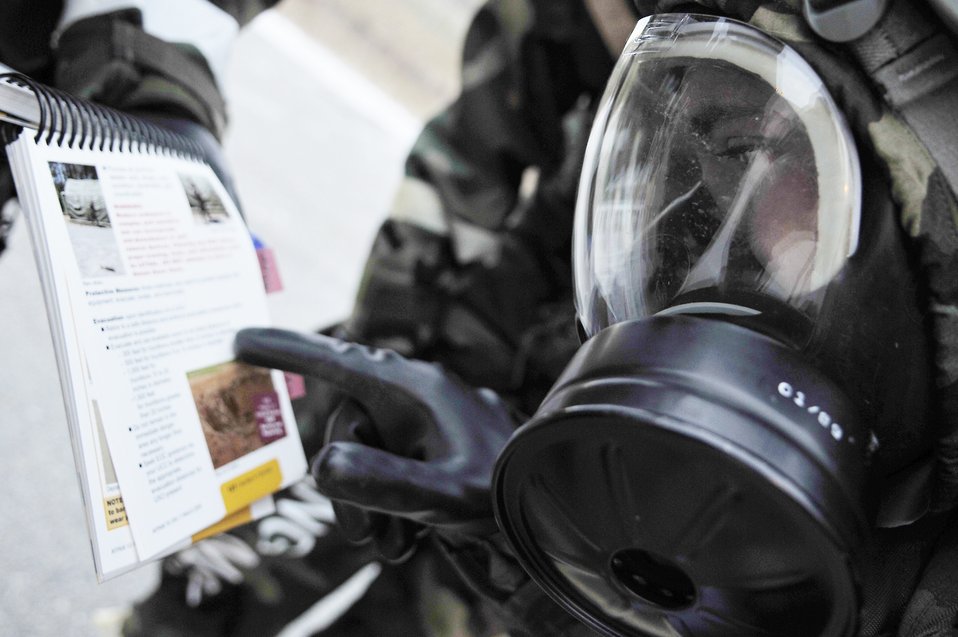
The next step is ...

Airman 1st Class Andrew O'Brien checks his Airman's Manual for instructions on how to properly cordon off unexploded ordnances during a training evaluation Oct. 23, 2009, at Eielson Air Force Base, Alaska. The evaluation tests the ability of Airmen on how to survive and operate in a chemical, biological, radiological, nuclear and high yield explosive environment. Airman O'Brien is assigned to the 354th Maintenance Squadron.